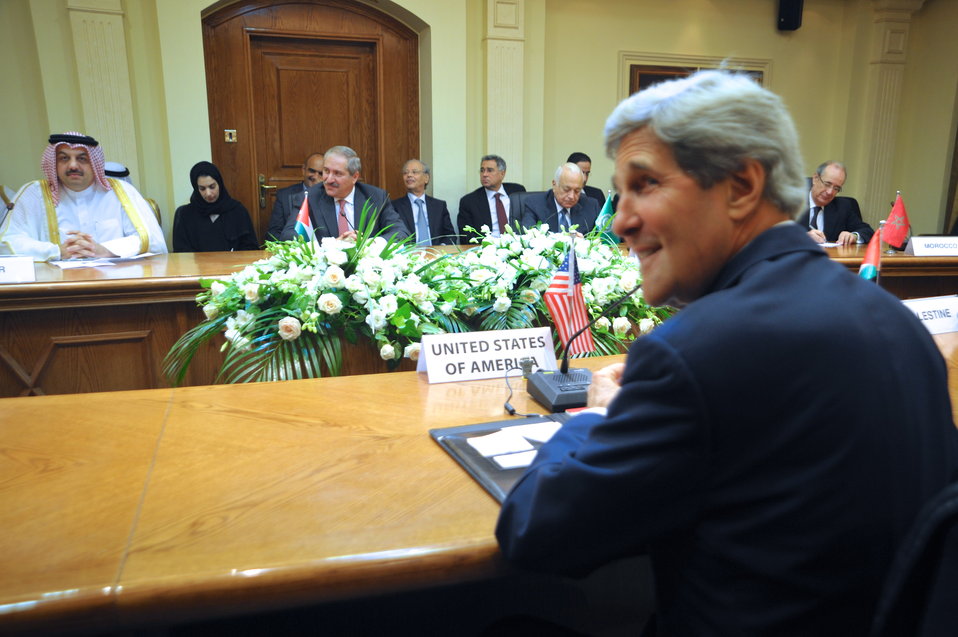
Secretary Kerry Prepares for a Meeting with Arab League Members

U.S. Secretary of State John Kerry sits across from Jordanian Foreign Minister Nasser Judeh before a meeting with members of the Arab League Peace Initiative in Amman, Jordan, on July 17, 2013.